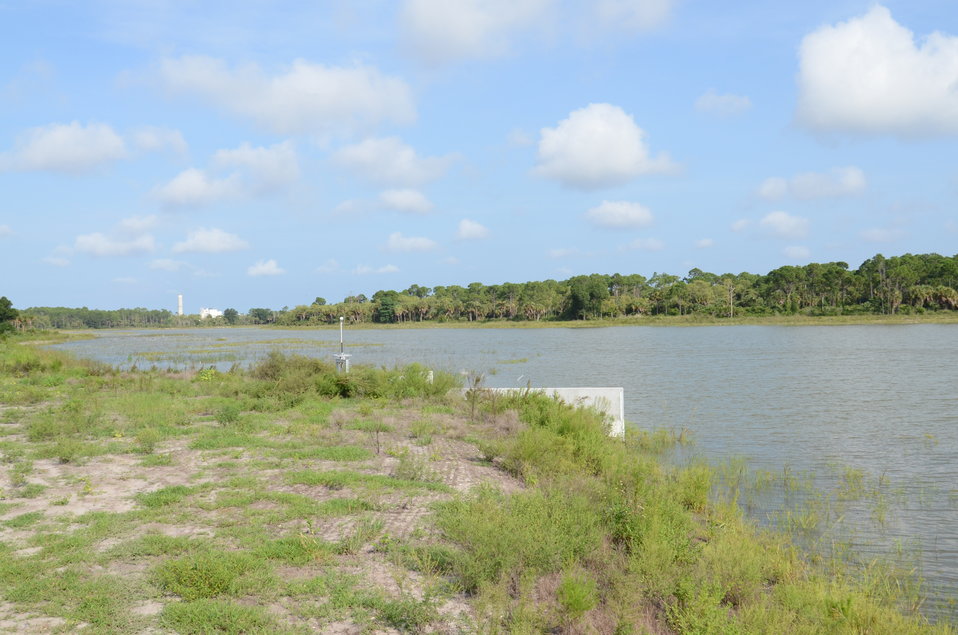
Agriculture Secretary Tom Vilsack today announced $100 million in financial assistance to acquire permanent easements from eligible landowners in four counties and assist with wetland restoration on nearly 24,000 acres of agricultural land in the Northern Everglades Watershed, FL, on Thursday, August 8, 2011.